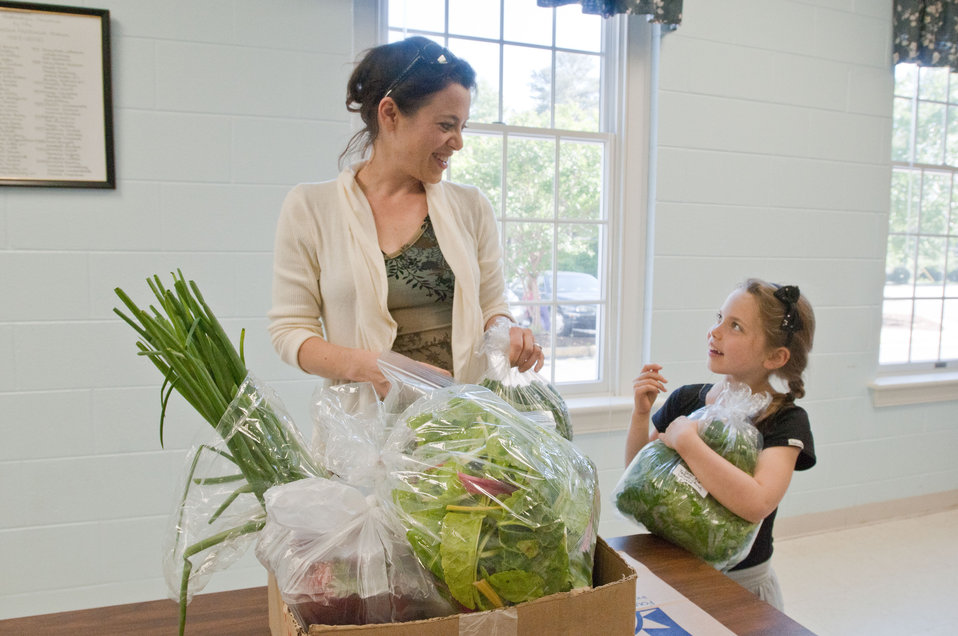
Christy (left) and Lilah Talbott of Richmond, VA came to the Fall Line Farms pick-up point at Bon Air United Methodist Church on Thursday, May 5, 2011. This is one of several pick-up points in the Richmond, VA area. This local food hub offers a wide variety of household food staples and specialty items. The difference from traditional co-ops is that members can pick their customized orders from an ever changing inventory of fruits, vegetables, meats, soaps, eggs, cheeses, flowers, honey, pastas, sauces, syrups, baked goods, mushrooms, flour and grains. Suppliers post what they have on a Lulus Local Food online listing and customers can make their selection Every Thursday suppliers deliver orders to, one of several pick-up points, designated by the customers in or around the Richmond area.